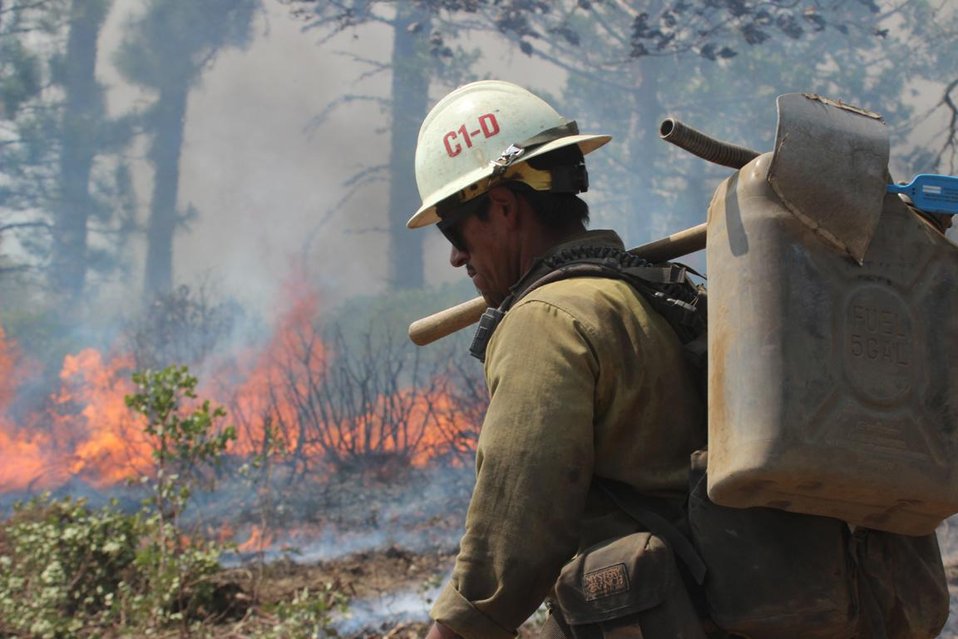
Monterey Hotshot hauls gas can at Rim Fire. The Rim Fire in the Stanislaus National Forest near in California began on Aug. 17, 2013 and is under investigation. The fire has consumed approximately 235,841 acres and is 70% contained.